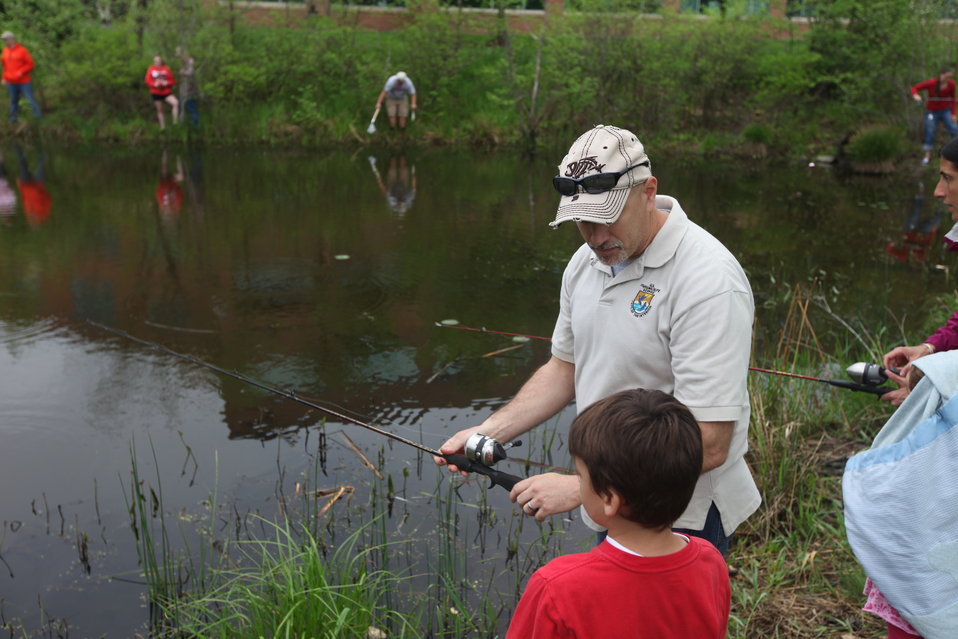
Fishing Derby